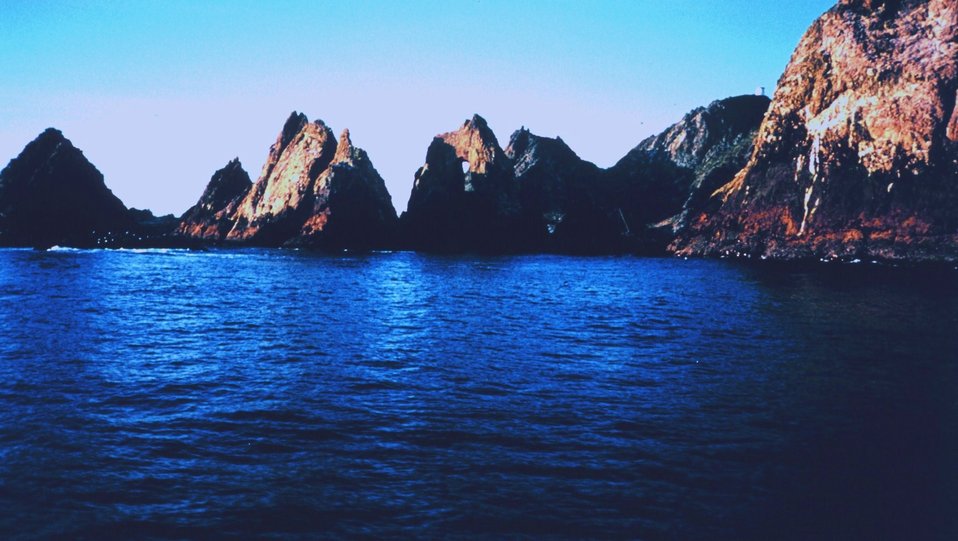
A clear day in the Gulf of the Farallones National Marine Sanctuary